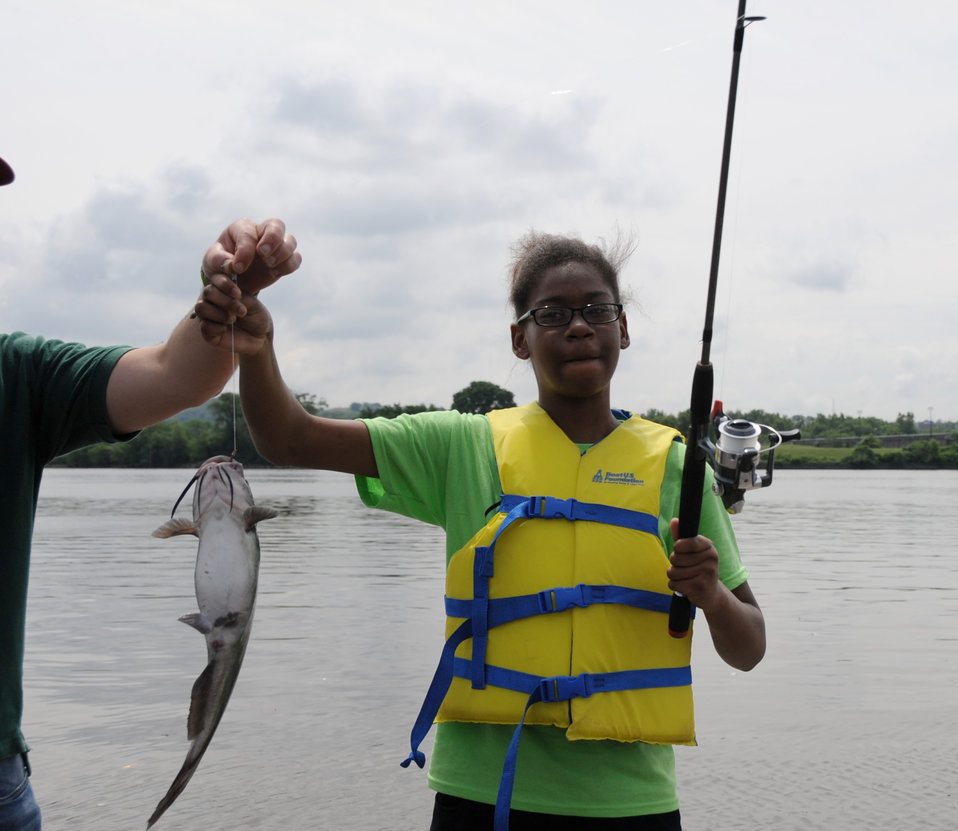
2013 National Fishing and Boating Week

Local students prepare to enjoy fishing at the annual kick-off of National Fishing and Boating Week on the Anacostia River in Washington D.C.